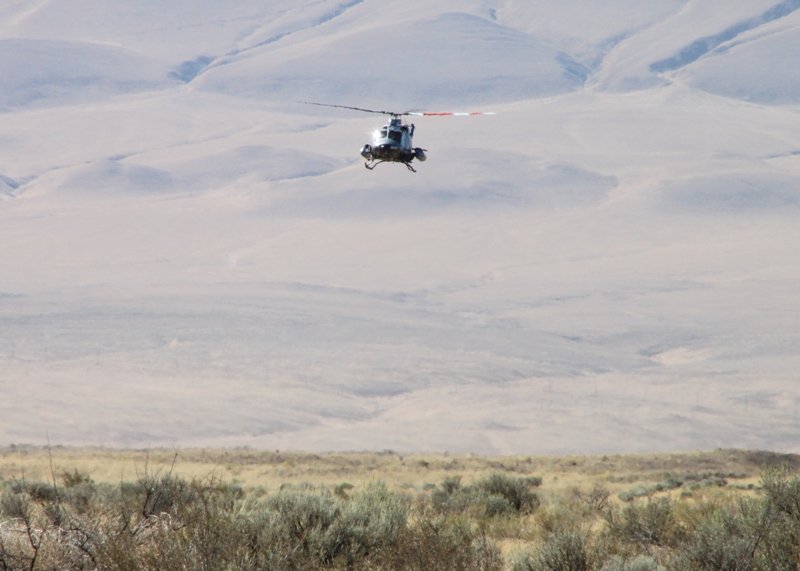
Recovery Act Workers Remediate and Restore Former Waste Sites

Survey work being conducted at Hanford, September 2009.